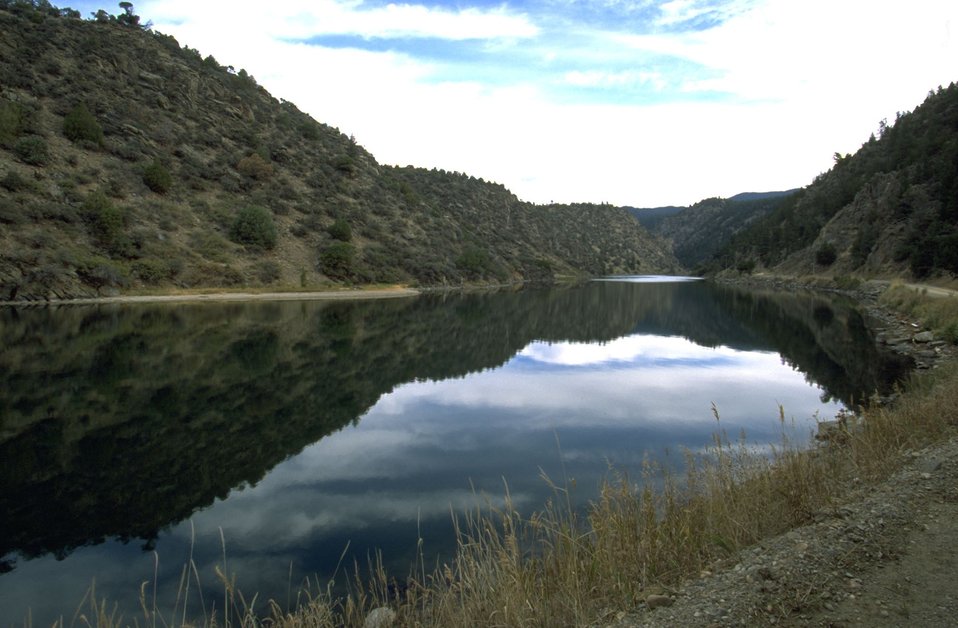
Reflection of the sky on the Madison River